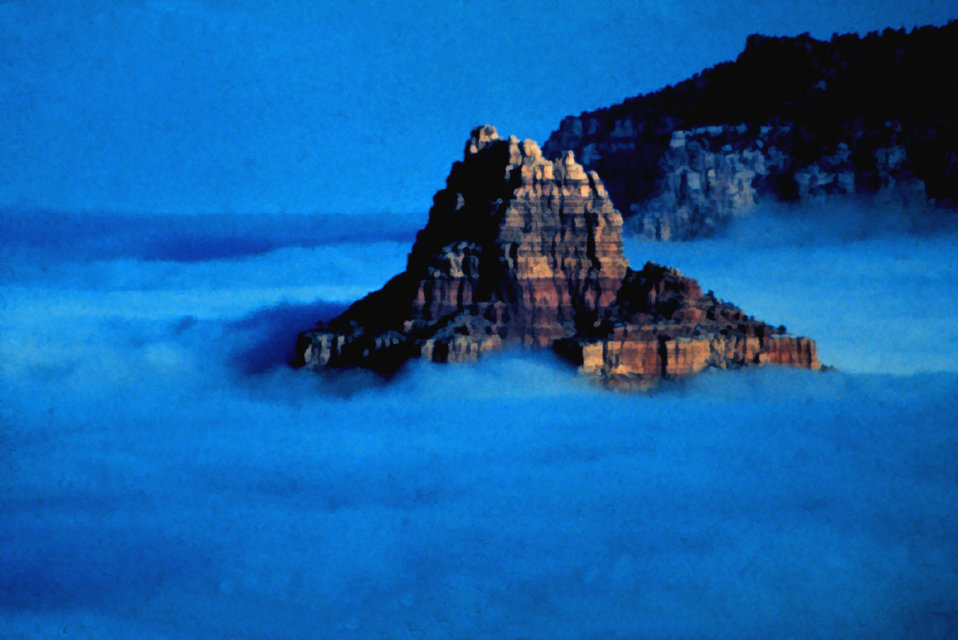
A rocky peak rises from a sea of fog in an Arizona valley